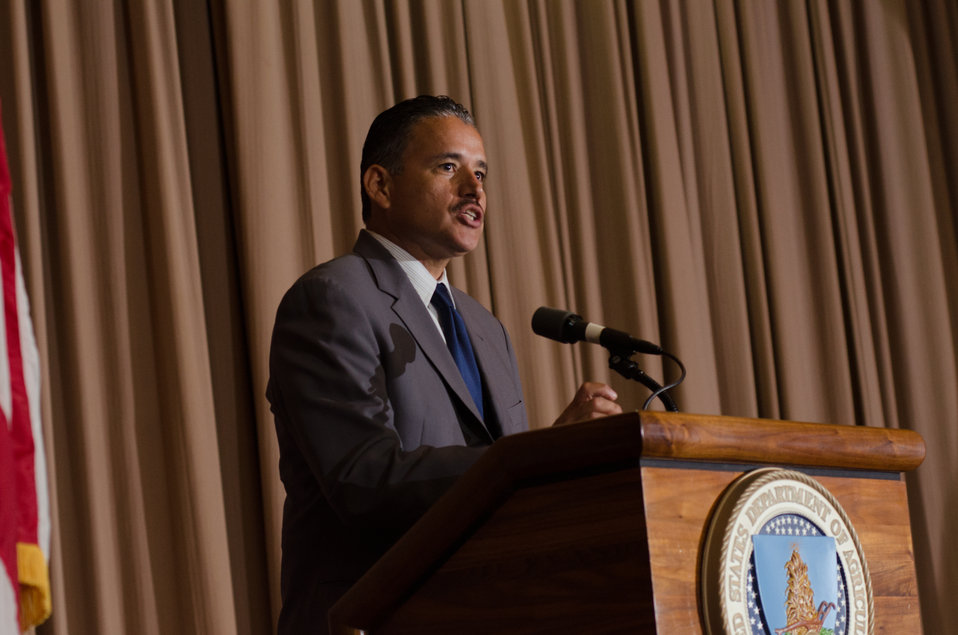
U.S. Department of Agriculture (USDA) Office of the Secretary, Deputy Chief of Staff Oscar Gonzales, Jr. made remarks on behalf of Secretary Thomas J. Vilsack, during the 2013 National Hispanic Heritage Month ”Hispanics: Serving and Leading our Nation with Pride and Honor,” on Thursday, Sept. 19, 2013, in the Jefferson Auditorium, USDA Headquarters, Washington, D.C.